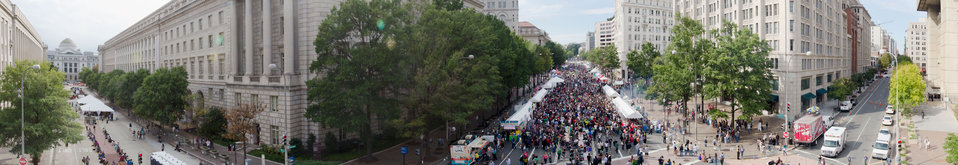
(Virtual panorama) The Taste of D.C., event highlights more than 70 eateries, 30 specialty beer providers, the United Service Organization (USO) Metropolitan Washington, and live bands. It is anticipated that more than 500,000 people will attend over the course of the three-day event, which extends from the White House to the Capitol, along Pennsylvania Ave. in Washington D.C. on Saturday, October 6, 2012. Agriculture Food Safety and Inspection Service specialists present talks and cooking demonstrations. Agriculture’s mobile Discovery Zone is on hand to educate children and parents about the four main principals of food safety – clean, separate, cook and chill.